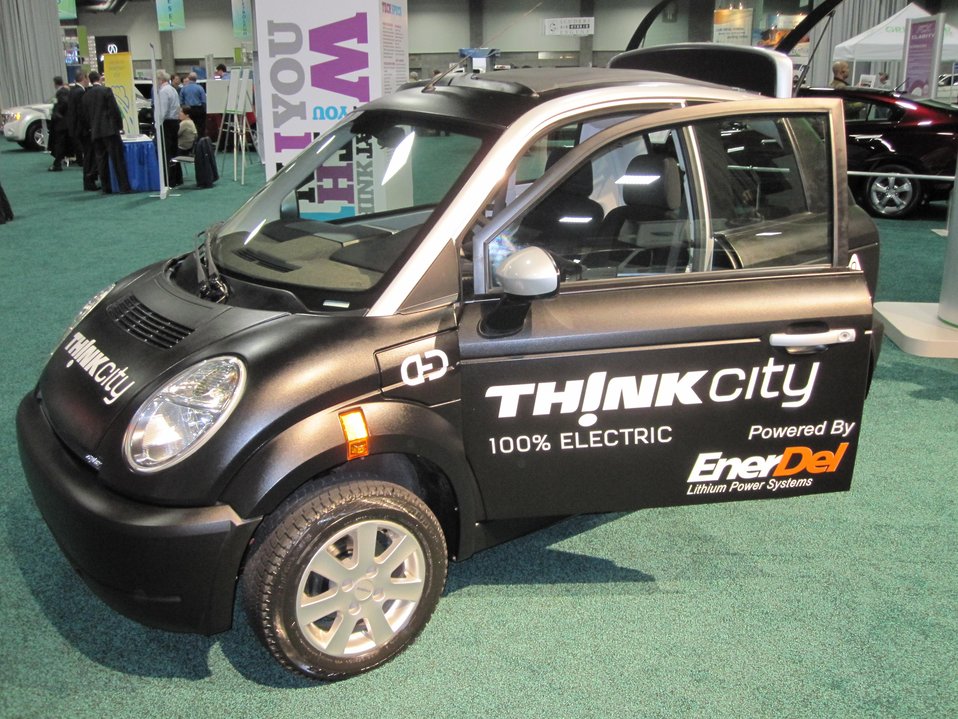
Hybrid Electric Vehicle (HEV), Plug-In Hybrid Electric Vehicle (PHEV), and Battery Electric Vehicle (BEV) on display at the 2010 Electric Vehicle Technology Demonstration in Washington, DC.